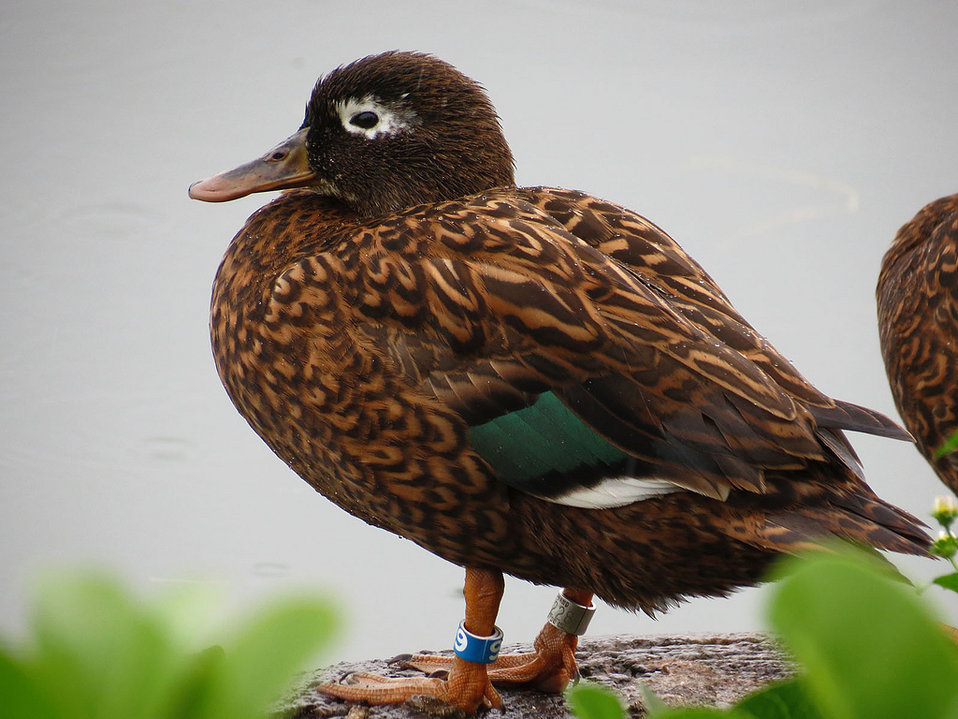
endangered Laysan duck

Midway Atoll National Wildlife Refuge,
Papahānaumokuākea Marine National Monument
January 2012